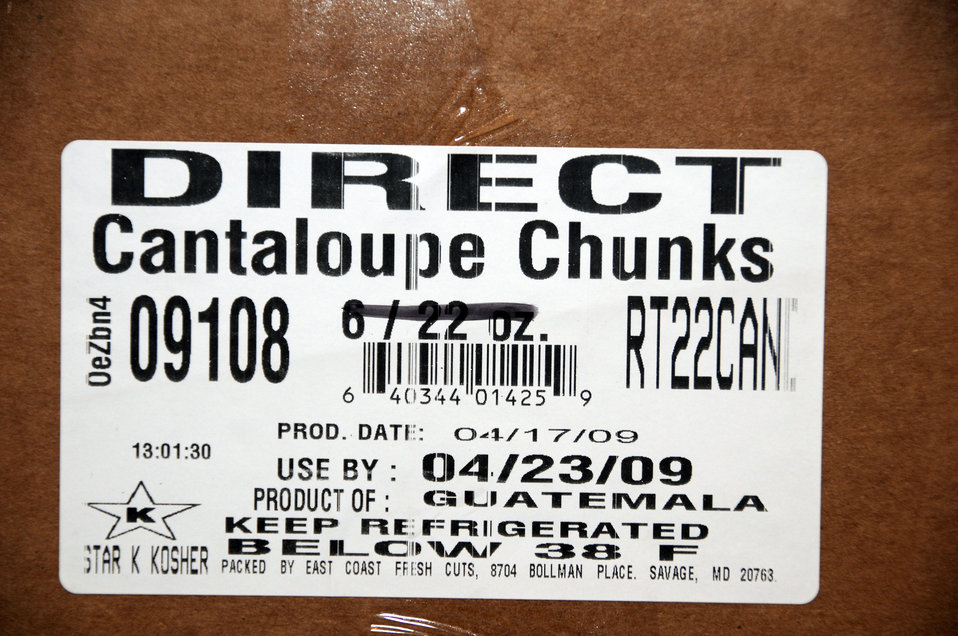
This is an example of a Country of Origin label (COOL) at a grocery market in Maryland on April 20, 2009.